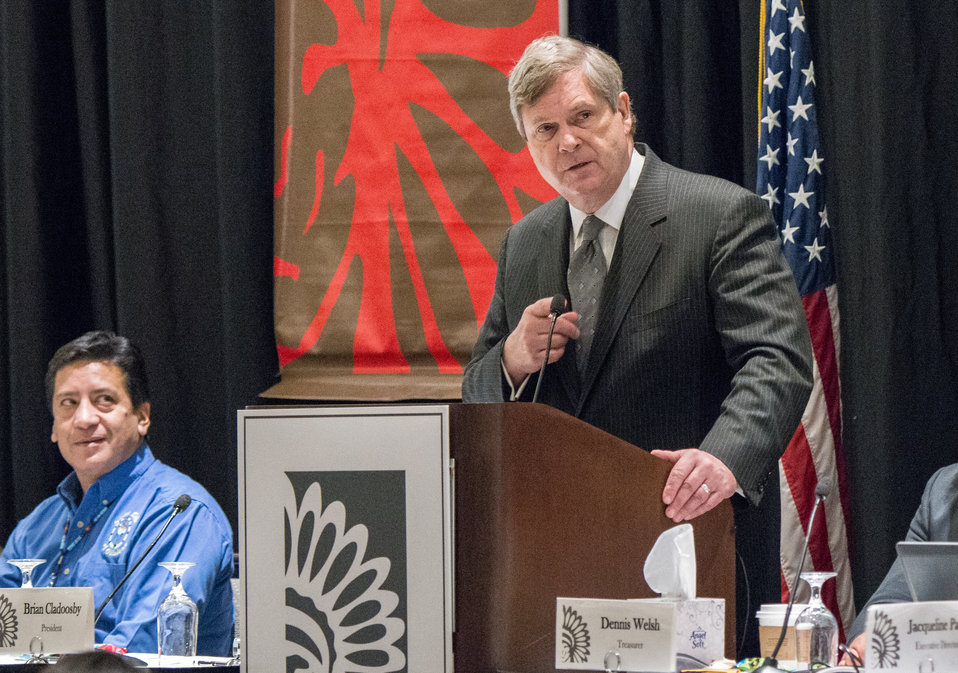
Agriculture Secretary Tom Vilsack addresses the 2014 National Congress of American Indians (NCAI) Executive Council Winter Session at the Westin Washington City Center in Washington, D.C. on Thursday, Mar. 13, 2014.